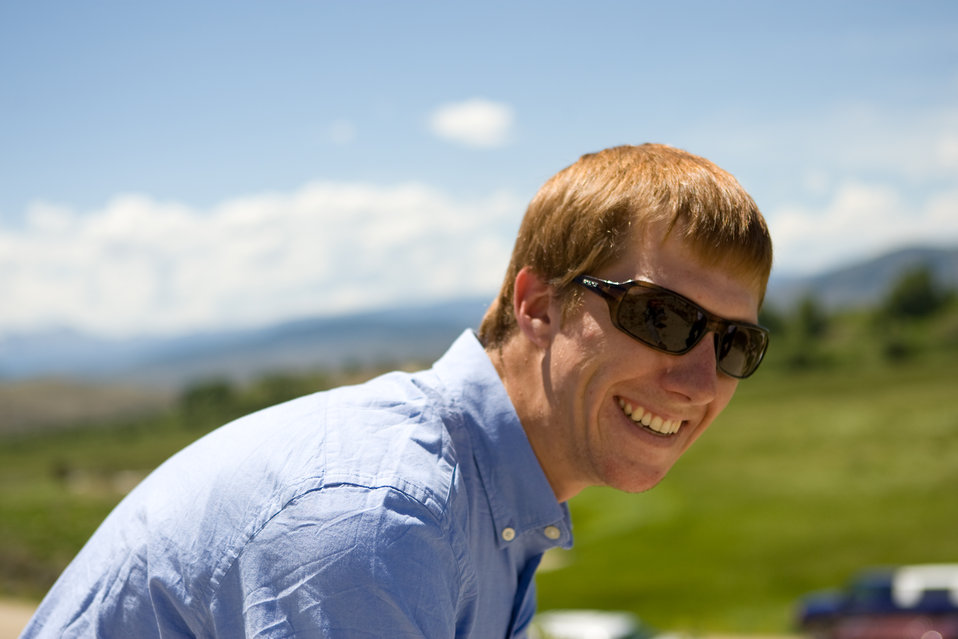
Colorado Rare Plant Conservation Initiative

The Colorado Rare Plant Conservation Initiative (RPCI) is a partnership of 23 statewide and regional agencies, private organizations, and academic institutions working to conserve 121 rare plants in Colorado. As part of these efforts the group developed the Colorado Rare Plant Conservation Strategy, developed Best Management Practices to reduce energy development impacts, addressed climate change, and developed focused strategies for the conservation of individual species at eight priority landscapes. The group has also worked to coordinate volunteer efforts for plant conservation across the state.